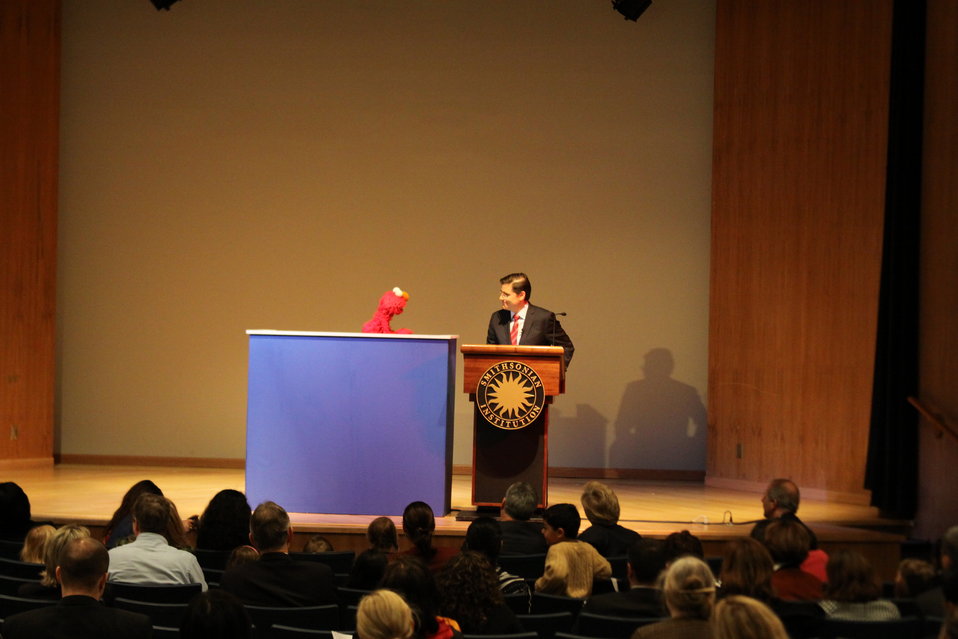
March 12, 2010- Smithsonian Broadband with Elmo